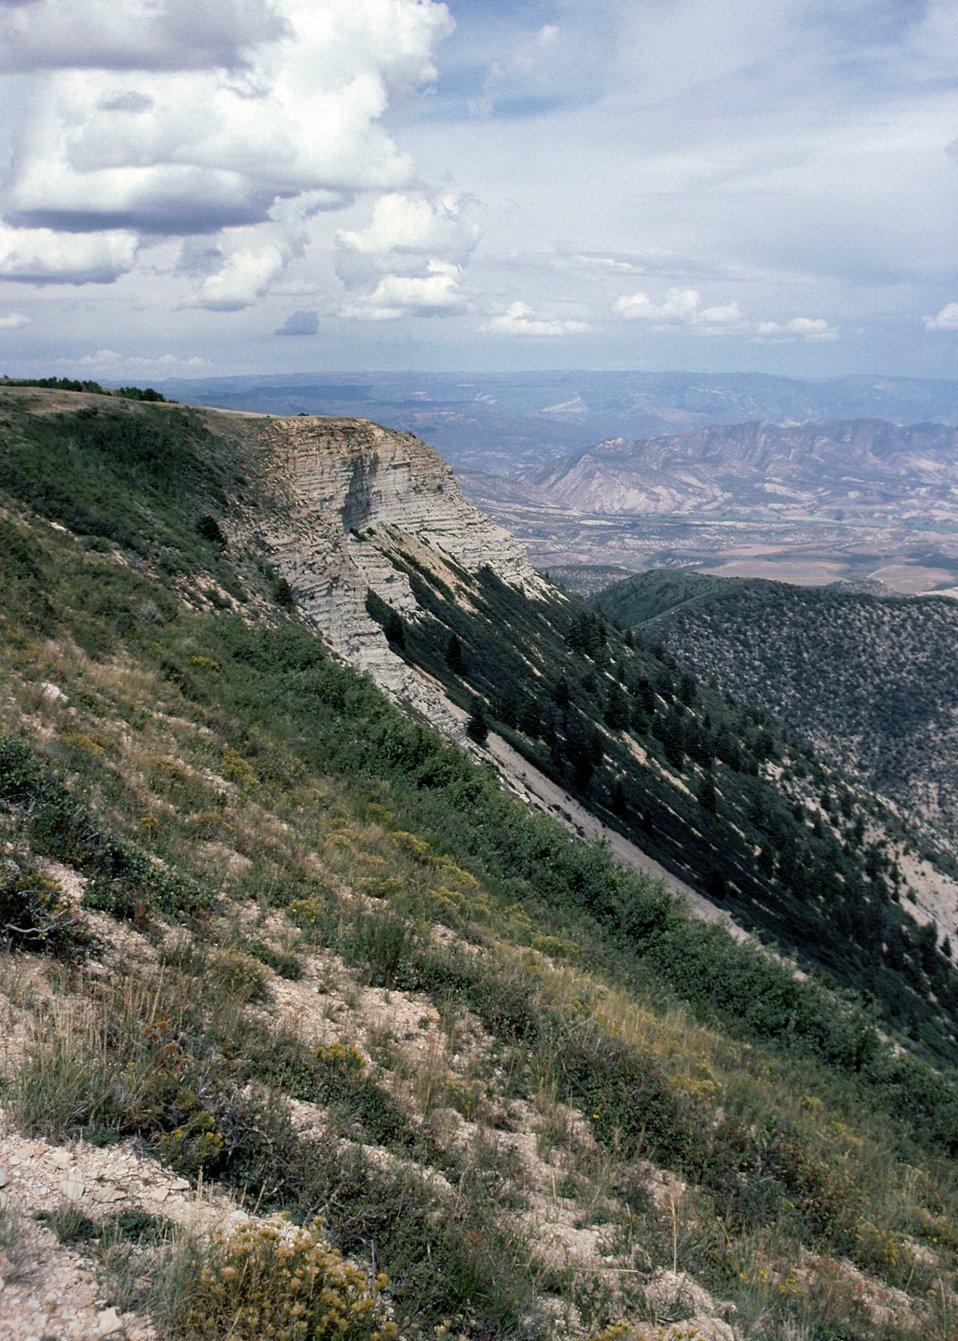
View from Anvil Point Road